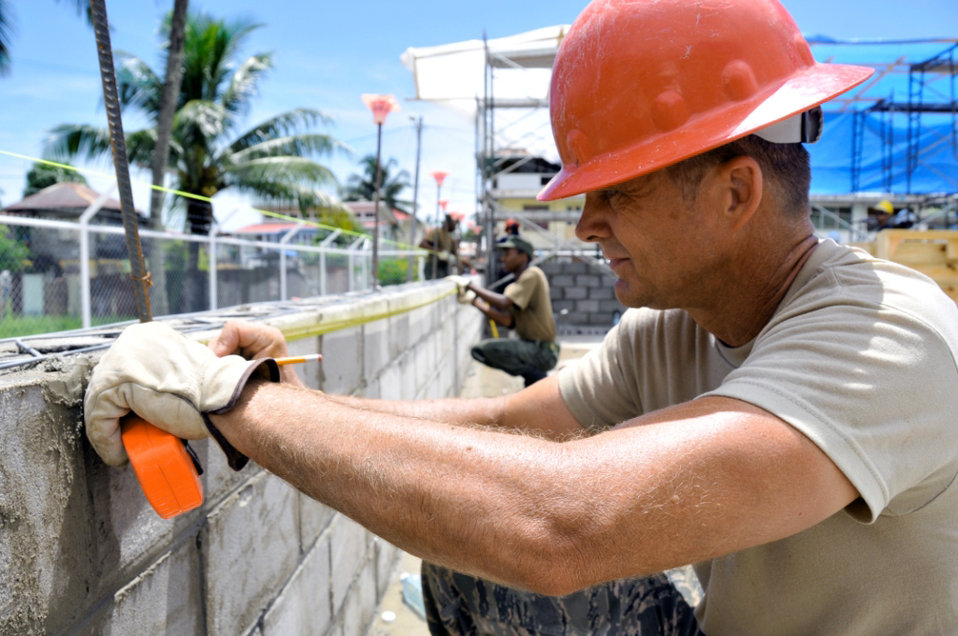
New Horizons Guyana 2009 comes to a close

Chief Master Sgt. Steve Milhollin helps a Guyana Defense Force engineer make block measurements to ensure the joints in a concrete wall stay in line July 7, 2009, in Georgetown, Guyana. Airmen are participating in New Horizons Guyana, a U.S. Southern Command-sponsored annual exercise designed to strengthen ties with partner nations in Central and South America through combined quality-of-life improvement projects. Chief Milhollin is a chief engineer.